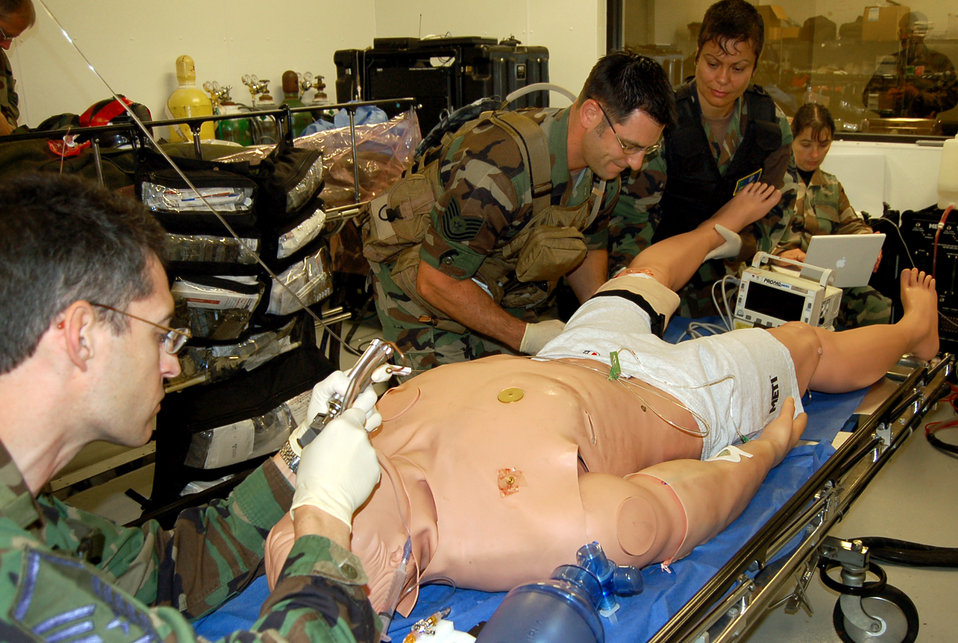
Mannequins help improve casualty care

While Master Sgt. John Schiller (left) secures the airway on a computerized mannequin, Tech. Sgt Robert Carcieri and Staff Sgt. Suellen Carire begin to tend to a leg wound during a new Air Force Special Operations Command casualty evacuation course on Thursday, May 18, 2006. The realistic training is geared to better prepare medics for the chaos of combat operations. All three Airmen are from the 920th Rescue Wing, Patrick Air Force Base, Fla., and were among the first students to attend new course.